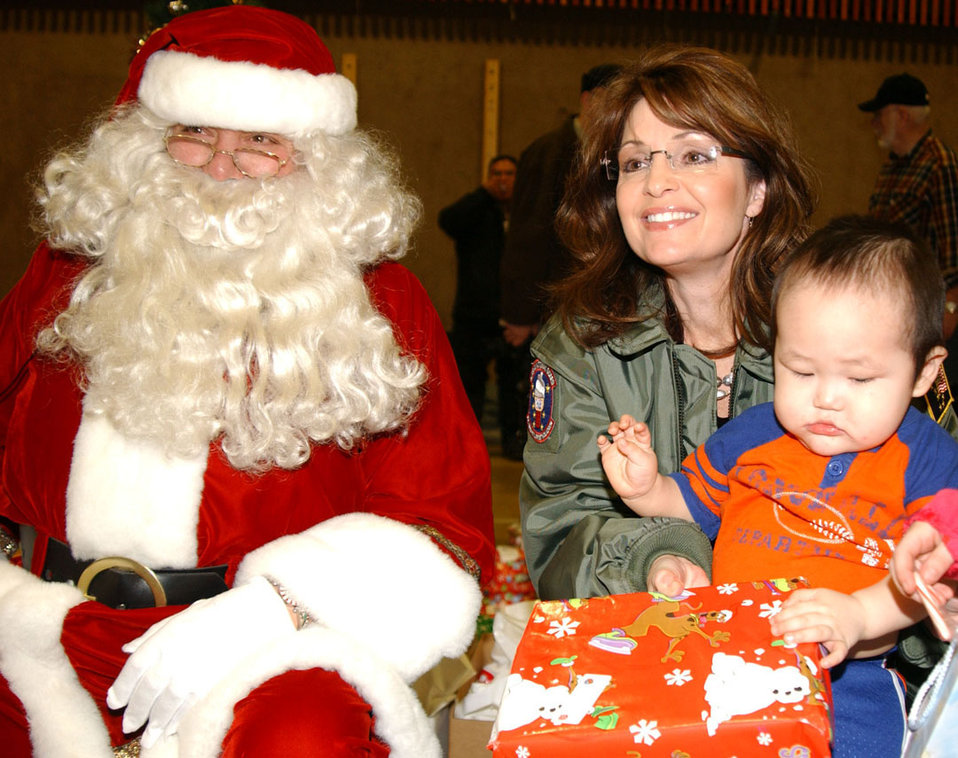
Alaska Guard continues Operation Santa Claus tradition

Alaska Gov. Sarah Palin helps Santa pass out gifts during Operation Santa Claus 2008 Dec. 6 in Kivalina, Alaska. Operation Santa Claus, an Alaska National Guard community relations and support program, provides toys, books and school supplies for young people in communities across the state.